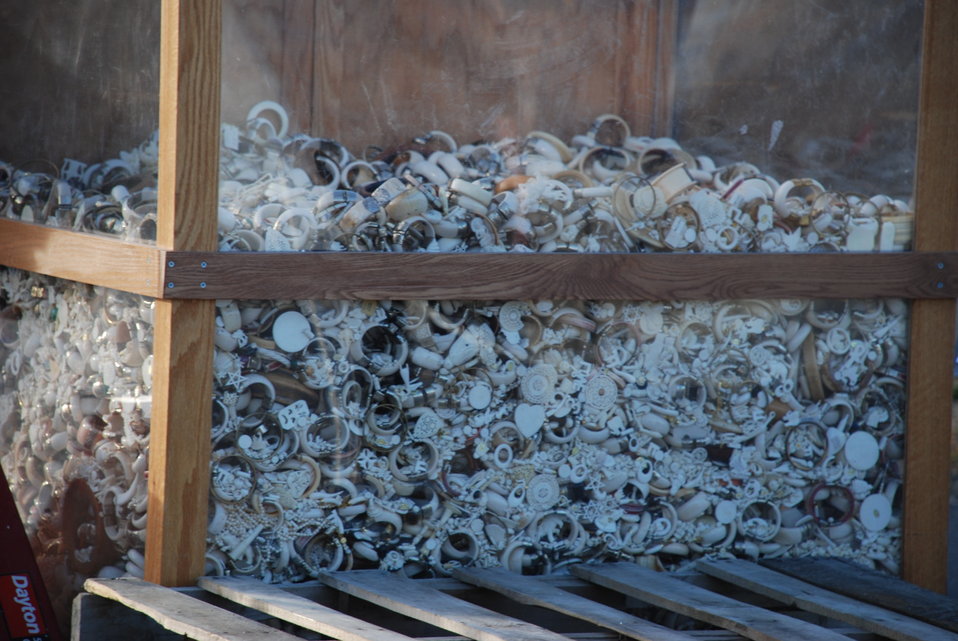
Ivory Crush 2013